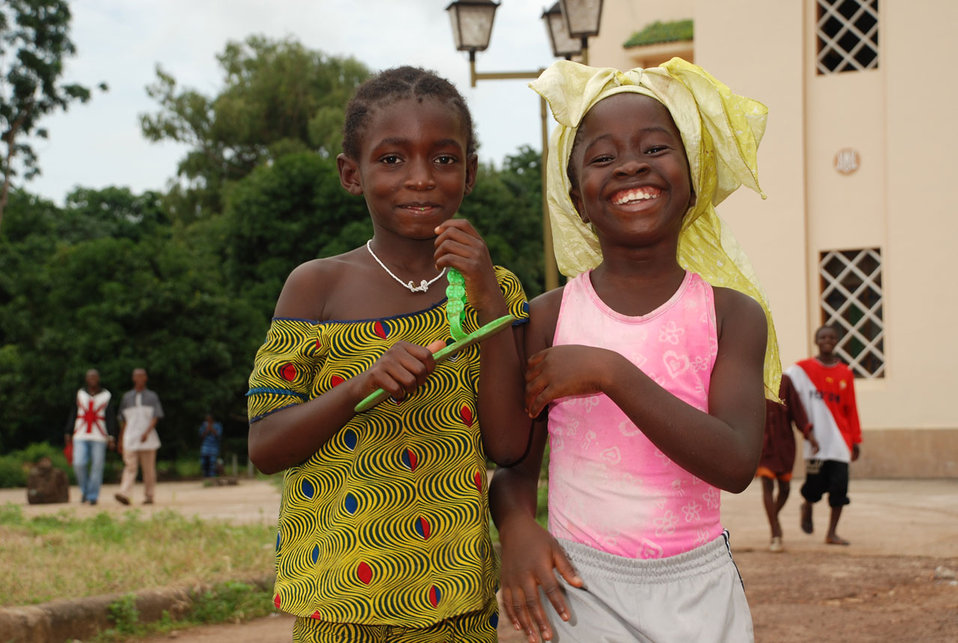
African girls

Two smiling african girls.